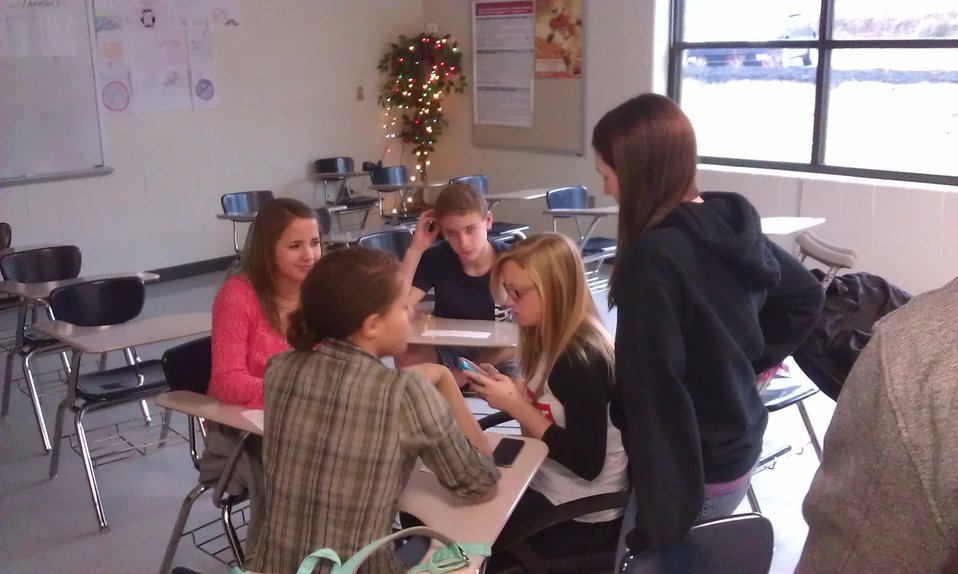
Tennessee's NDFW 2013

Kingston,Tenn. Roane County Anti-Drug Coalition, 2013 National Drug Facts Week activities.